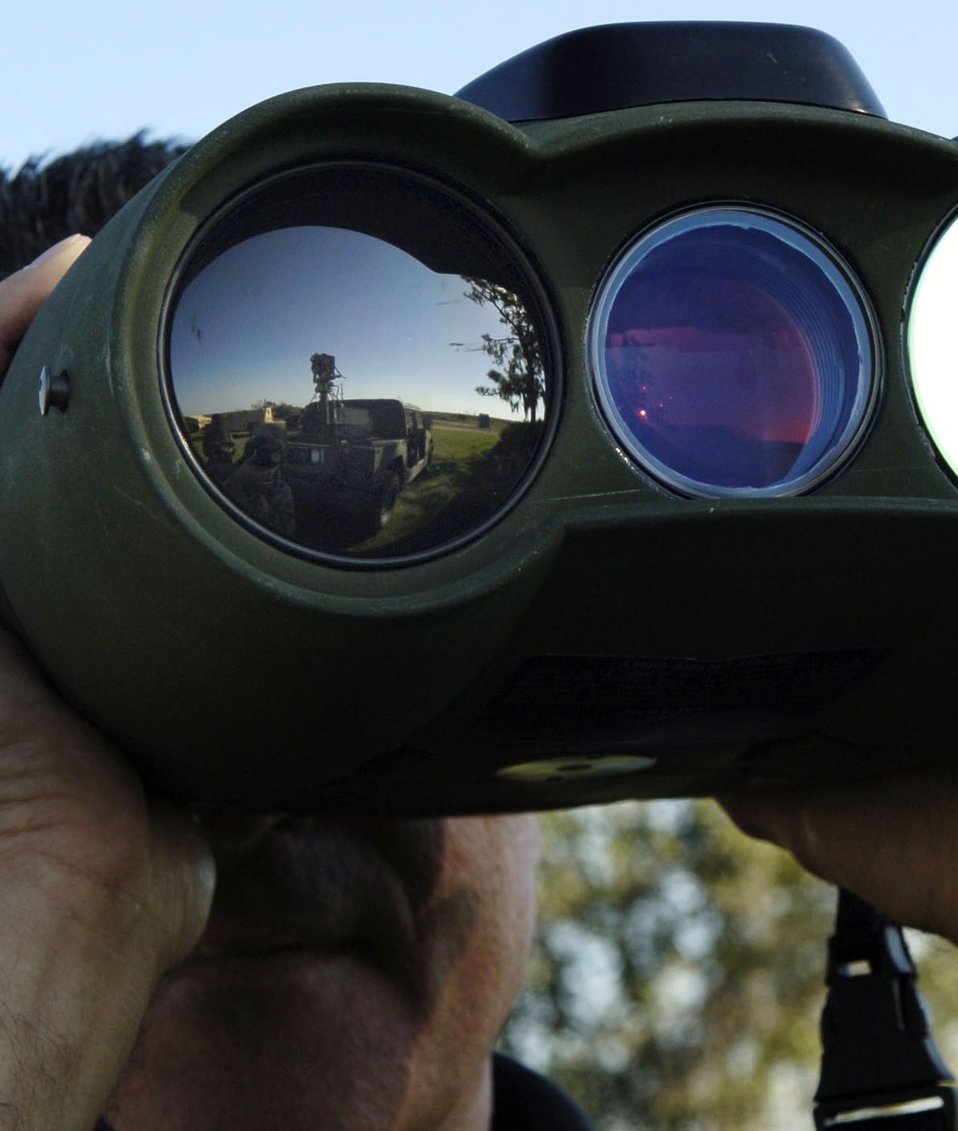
Warfighters gather to train for close-air-support operations

Bob Raulerson demonstrates a MKVII target locator to joint terminal attack controllers at Atlantic Strike VI Nov. 6 at Avon Park, Fla. Contractors and industry representatives held training sessions throughout the event to familiarize military members with new software and hardware upgrades headed to the battlefield. JTACs were then able to use new equipment during simulated enemy engagements on the Avon Park Air Ground Training Complex where fellow Airmen designed scenarios to prepare units for urban close-air-support operations. Mr. Raulerson is an engineer with Northrop Grumman Corp's Laser Systems Division.